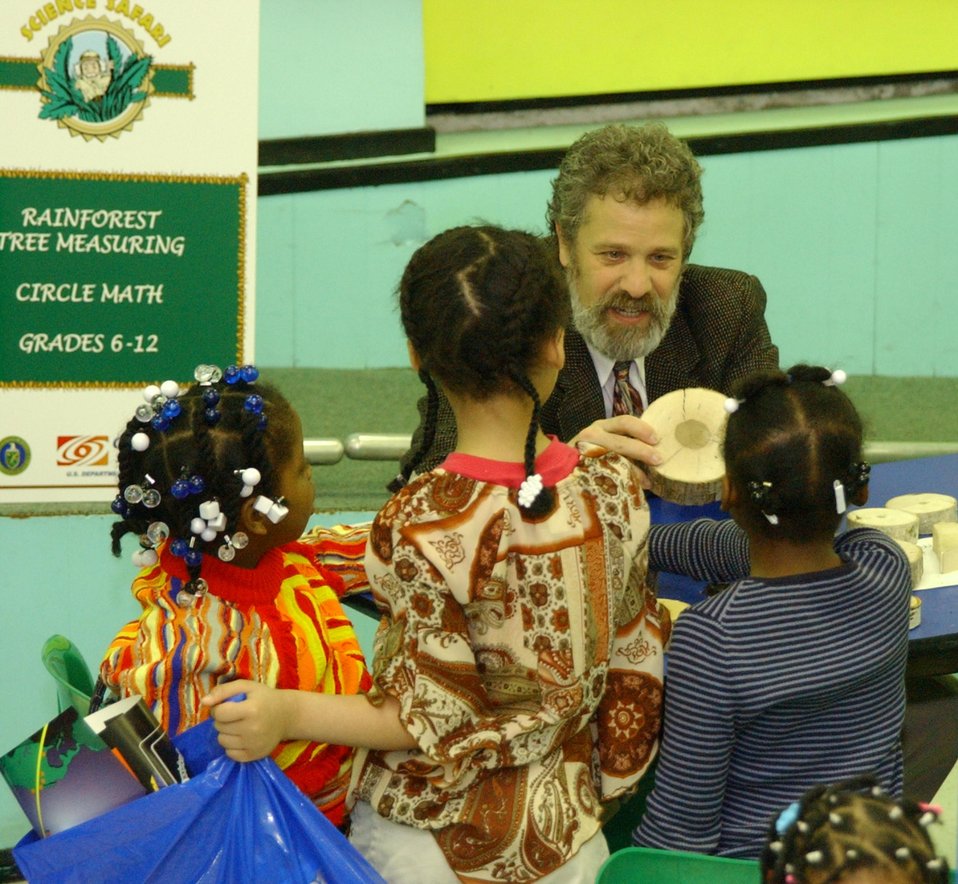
DR. PETER FALETRA OF DOE DEMONSTRATES TREE MEASURING TO ELEMENTARY SCHOOL STUDENTS IN WASHINGTON, DC.

DR. FALETRA, DOE'S SENIOR TECHNICAL ADVISOR FOR SCIENCE EDUCATION PARTICIPATED IN THE SCIENCE SAFARI WHICH TOOK PLACE AT THE CAPITAL CHILDREN'S MUSEUM ON MARCH 20, 2003. HE JOINED THE RAIN FOREST TREE MEASURING EXHIBIT AS PART OF EXCELLENCE IN SCIENCE, TECHNOLOGY AND MATHEMATICS EDUCATION WEEK.